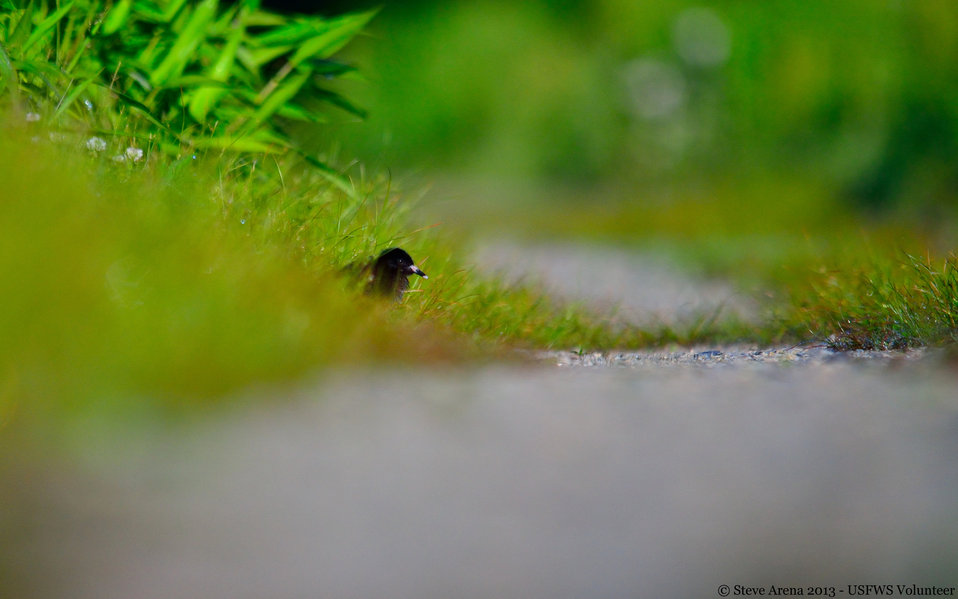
Virginia Rail (Rallus limicola) - newborn chick

Great Meadows National Wildlife Refuge, Concord, MA

Credit: Steve Arena/USFWS

09 June 2013